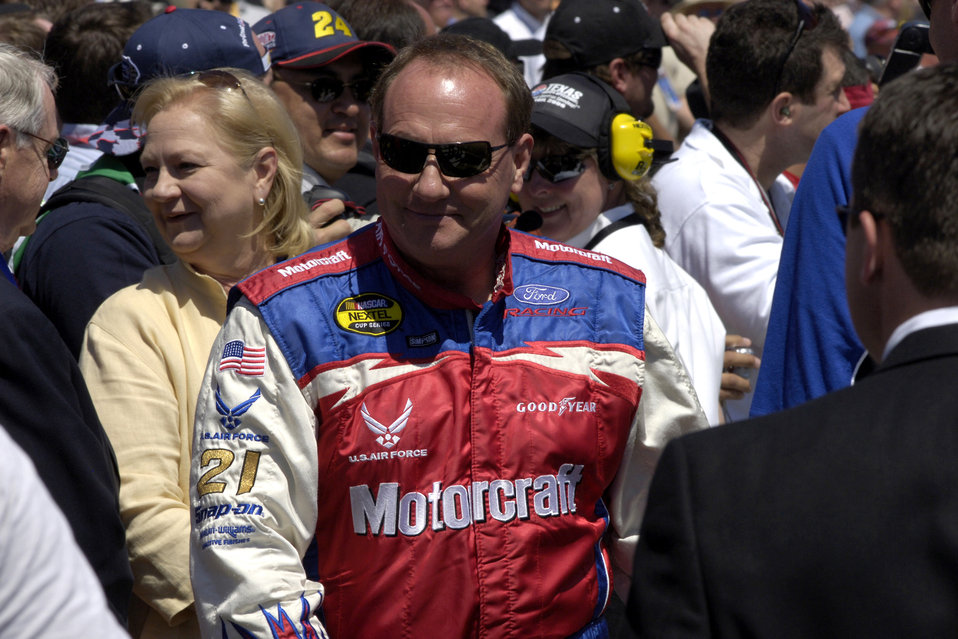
NASCAR thrills

Ken Schrader, the number 21 Motorcraft/Air Force NASCAR Nextel Cup Series driver, makes his way through the crowd during driver introductions at the Samsung/RadioShack 500 on Sunday, April 9, 2006, at Texas Motor Speedway. Schrader finished 16th, after qualifying 32nd, in a field of 43 drivers.